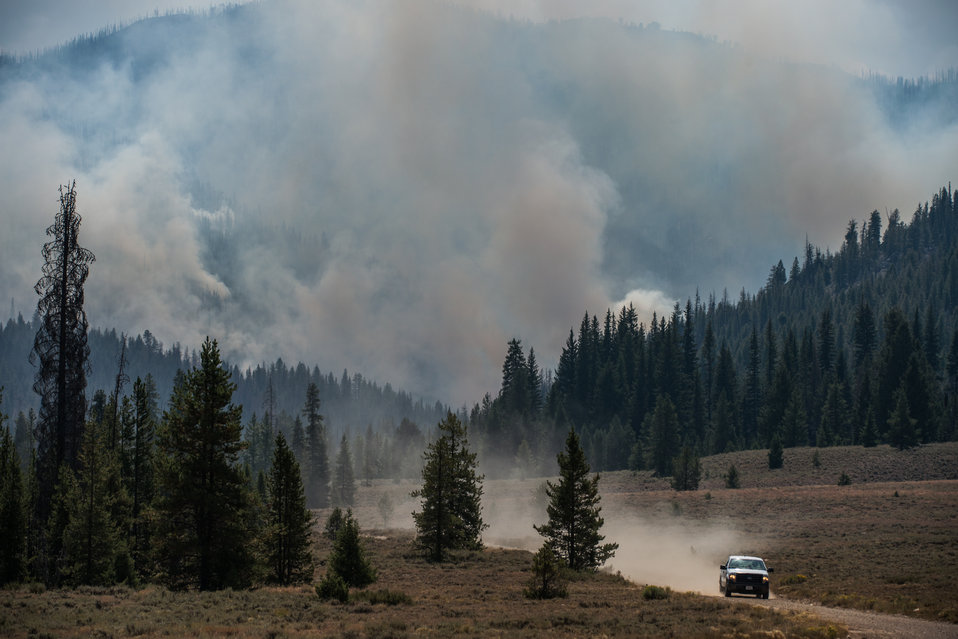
East Fork of Baker Creek, during the Beaver Creek Fire, northwest of Hailey, ID, on Tuesday, Aug 20, 2013.